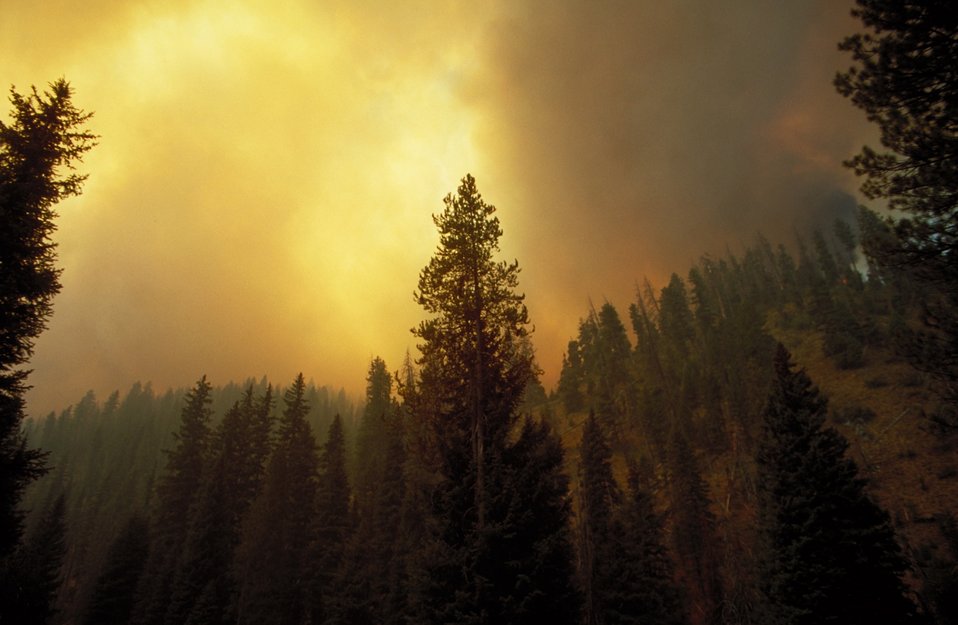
Smokey skies Fire Season 2000 Lower Snake River District LSRD